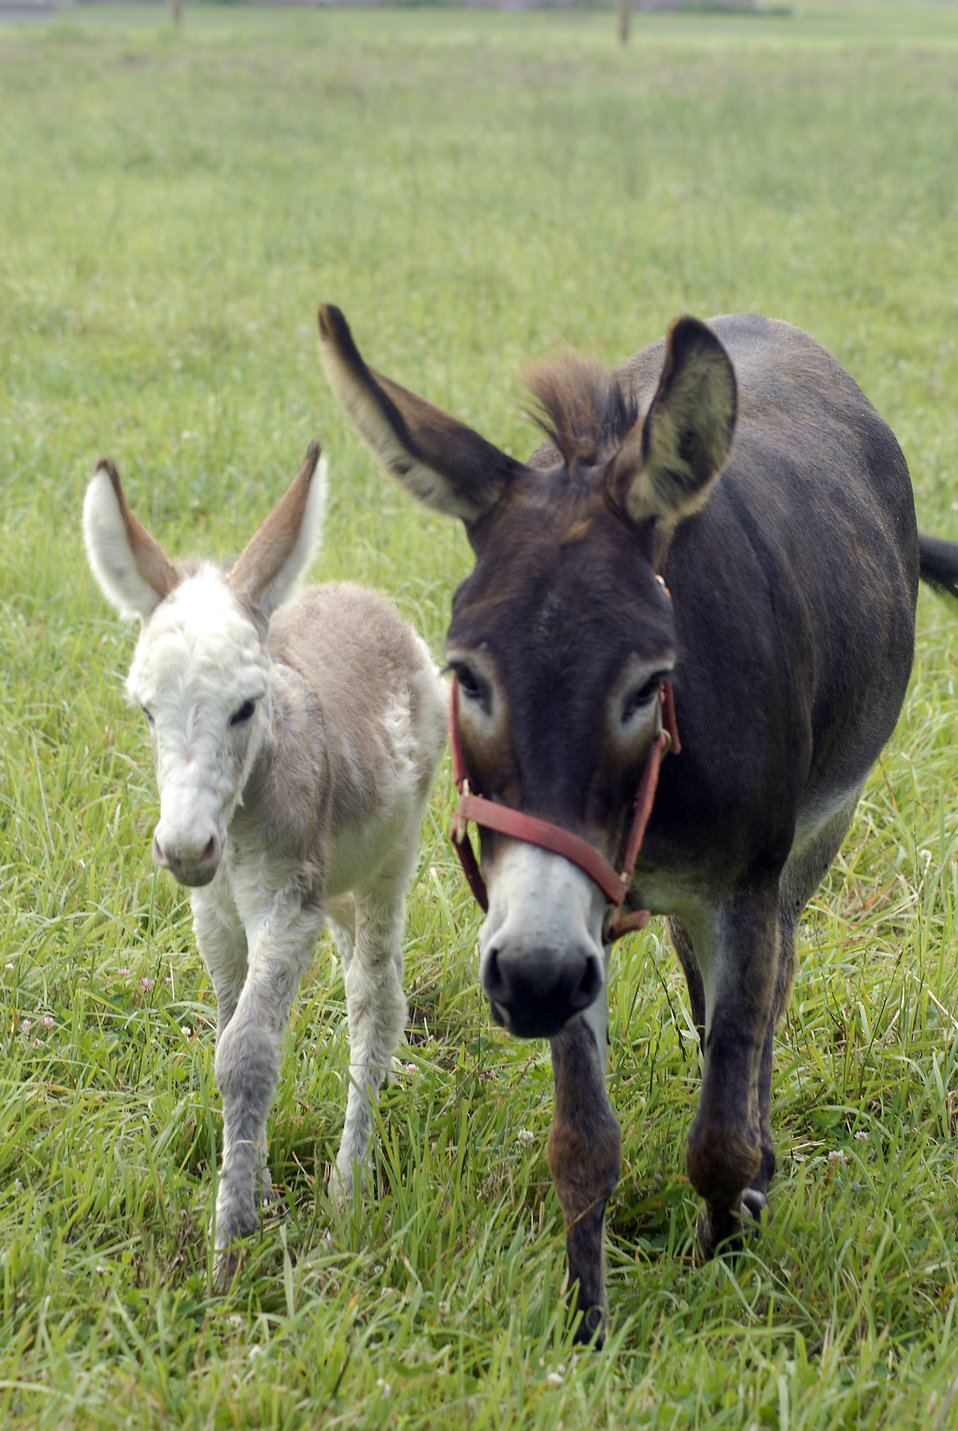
A female donkey and her foal graze on a farm in Delaware on July 7, 2008. A male donkey or ass is called a jack, a female a jenny or jennet.